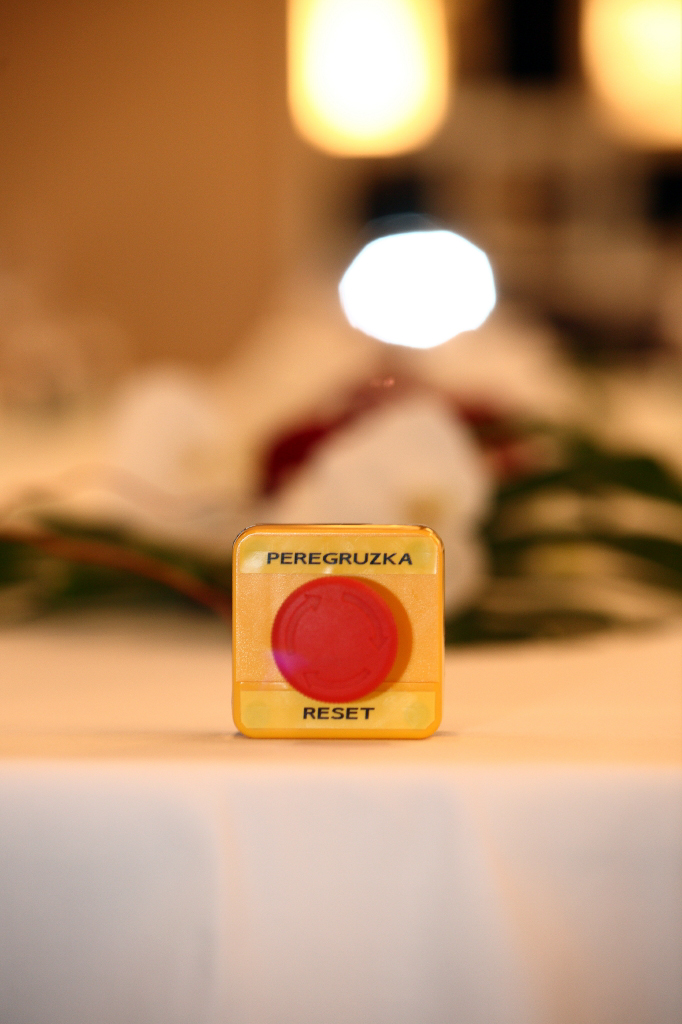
'Restart Button' offered by U.S. Secretary of State Hillary Rodham Clinton to Russian Foreign Minister Sergey Lavrov in Geneva, Switzerland March 6, 2009.